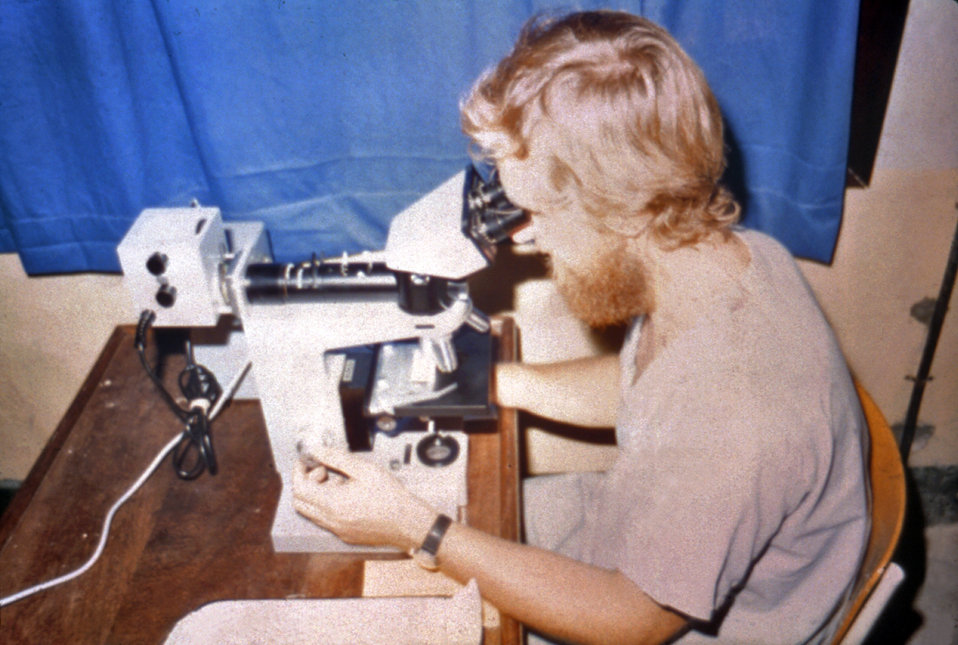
This CDC laboratorian was shown looking through a microscope at samples collected from the field by an Ebola survey team in Zaire, 1976.